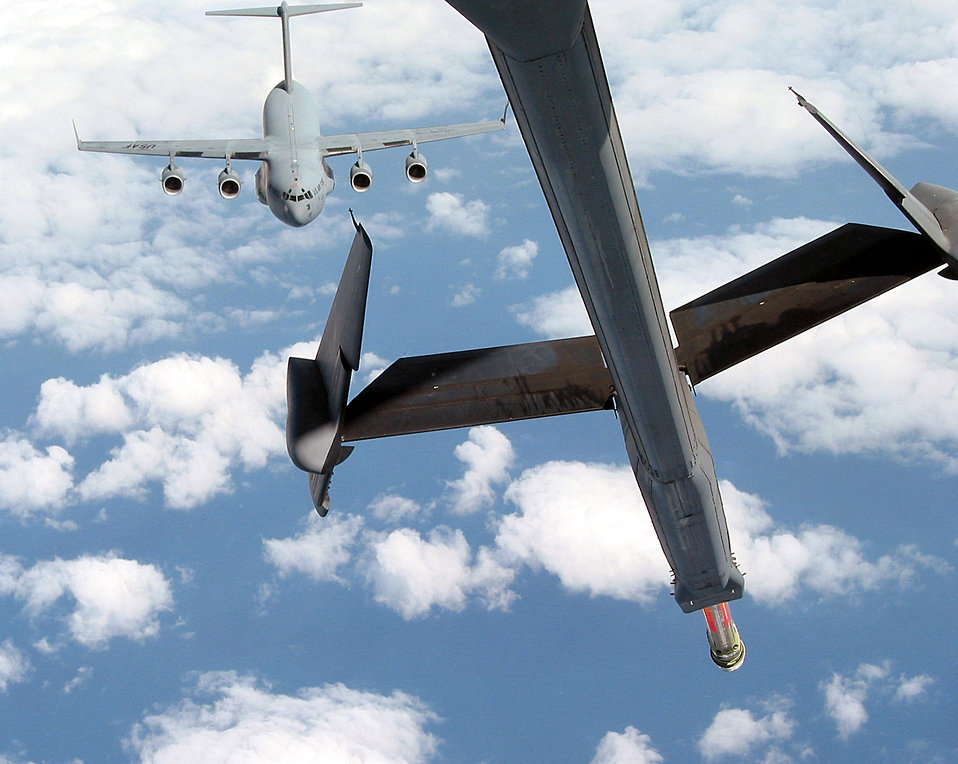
C-17 refueling

OPERATION IRAQI FREEDOM -- A Charleston-based C-17 Globemaster III moves into position to refuel from a KC-10A Extender over the Black Sea. The C-17 crew was returning from a humanitarian mission to Iraq. The KC-10 is based out of the 409th Air Expeditionary Group. Members from various Air Force units world-wide are currently deployed with the 409th AEG, Burgas Bulgaria, in support of Operation Iraqi Freedom.